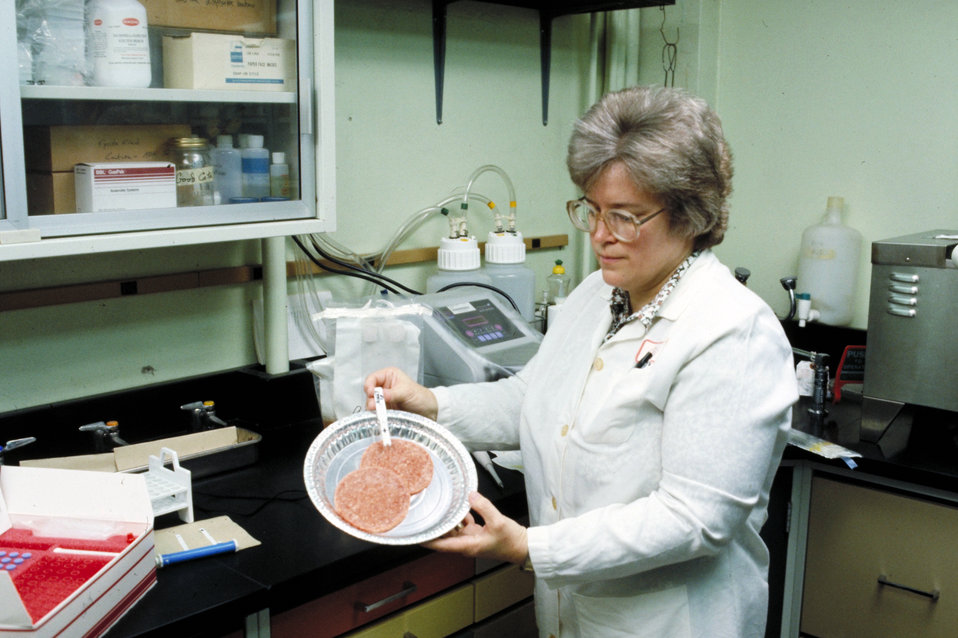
U.S. Department of Agriculture’s (USDA) Food Safety Inspection Service (FSIS) scientist conducts microbiological tests for the presence of specific pathogenic microorganisms in or on the product on March 15, 1993.